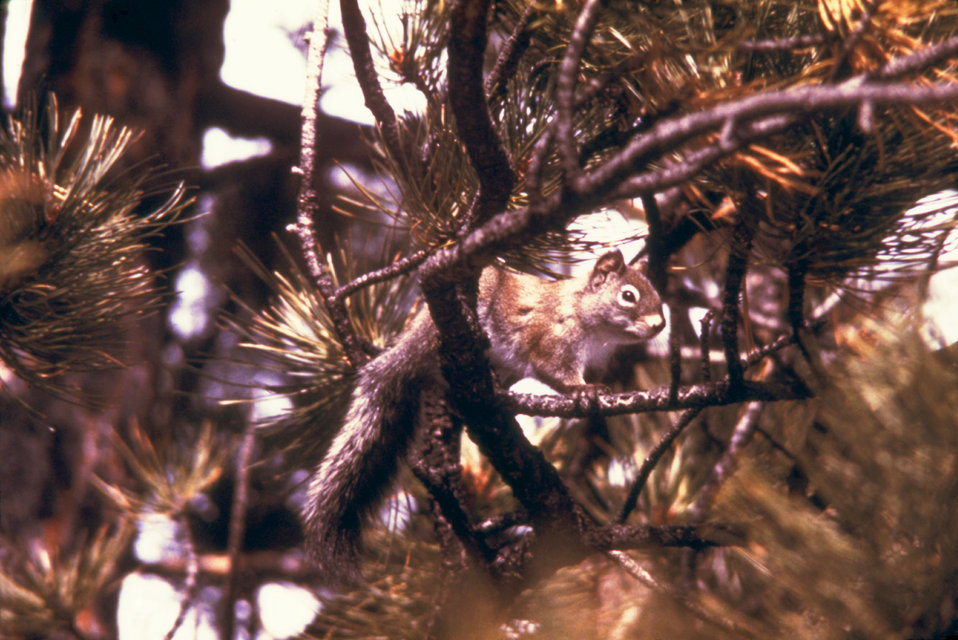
This pine squirrel, Tamiasciurus hudsonicus, is a host to both fleas and ticks.